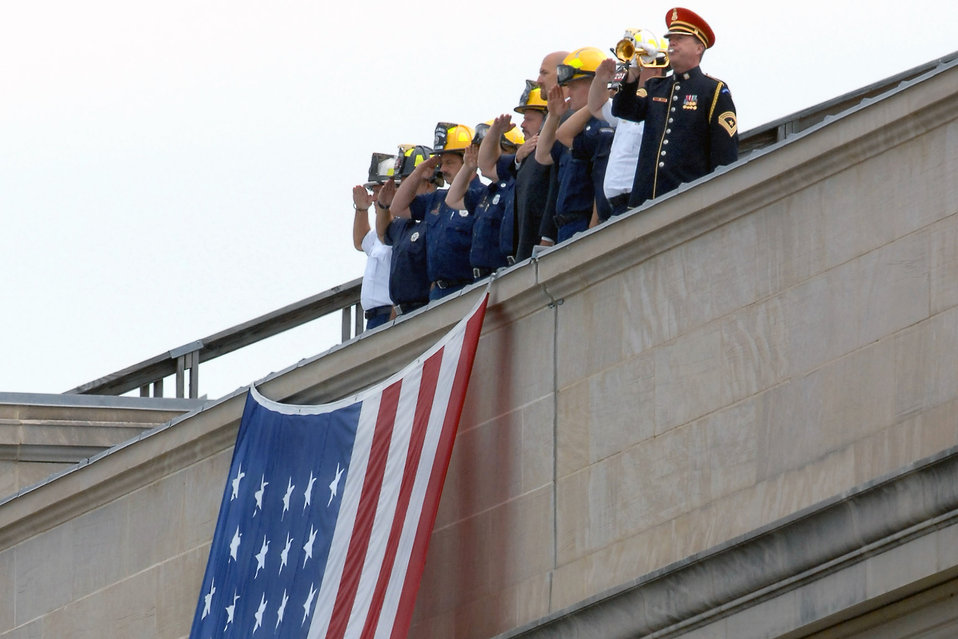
Pentagon Memorial opens to public

First responders stand atop the Pentagon during the Pentagon Memorial dedication ceremony Sept. 11 at Alexandria, Va. They stood at the spot where American Airlines Flight 77 crashed into the building on Sept. 11, 2001, killing 59 people aboard the flight and 125 in the building. First responders are the firefighters, police officers and other rescue workers who were first on the scene that day.